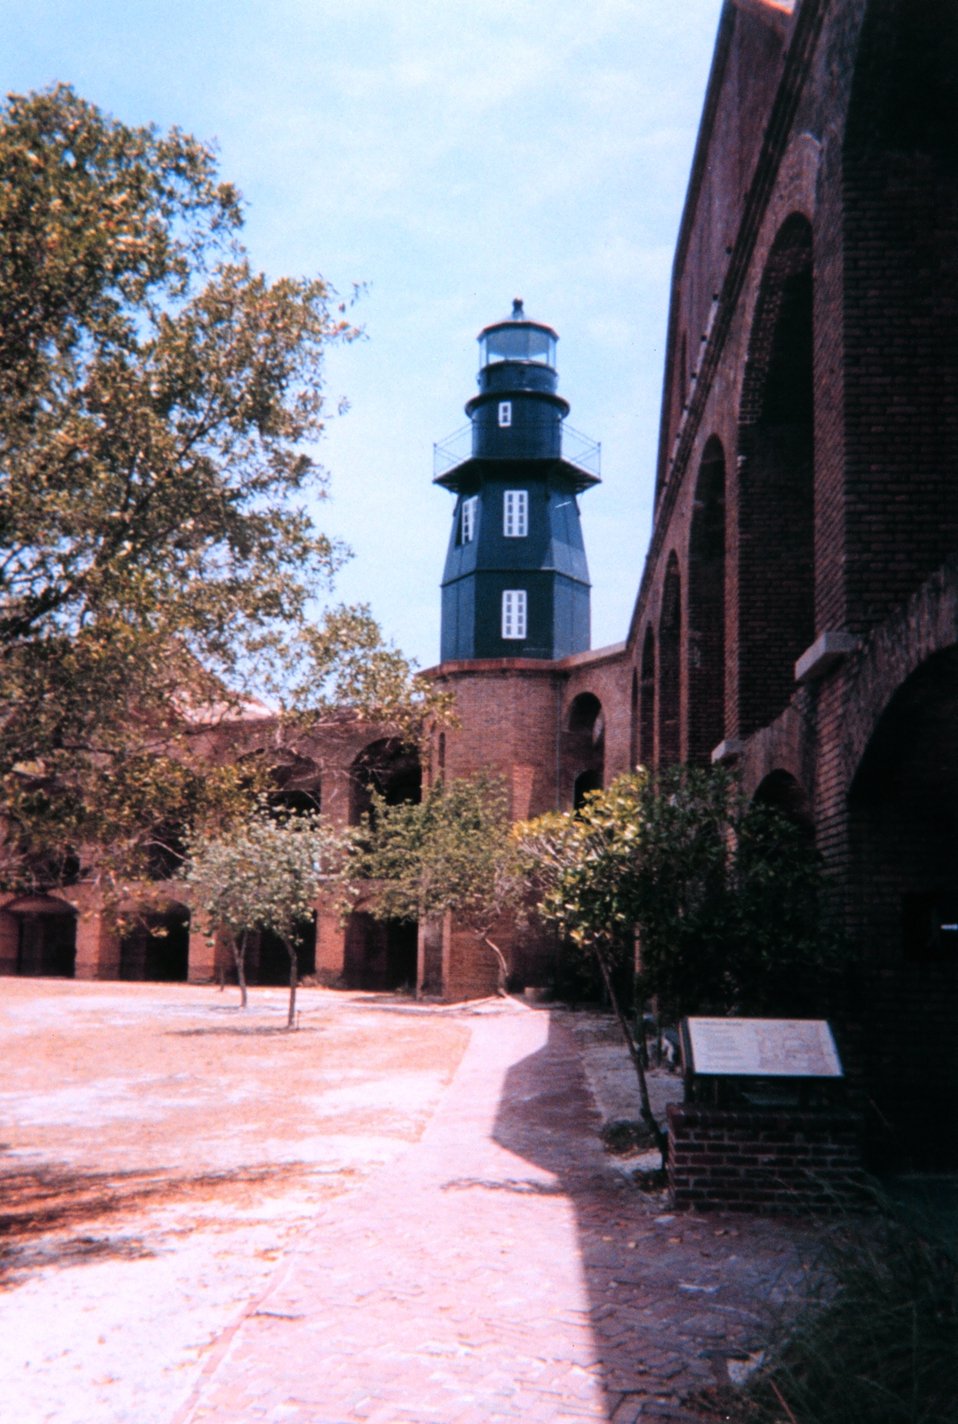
The lighthouse at Fort Jefferson, Dry Tortugas National Park, as seen from the interior of the fort.